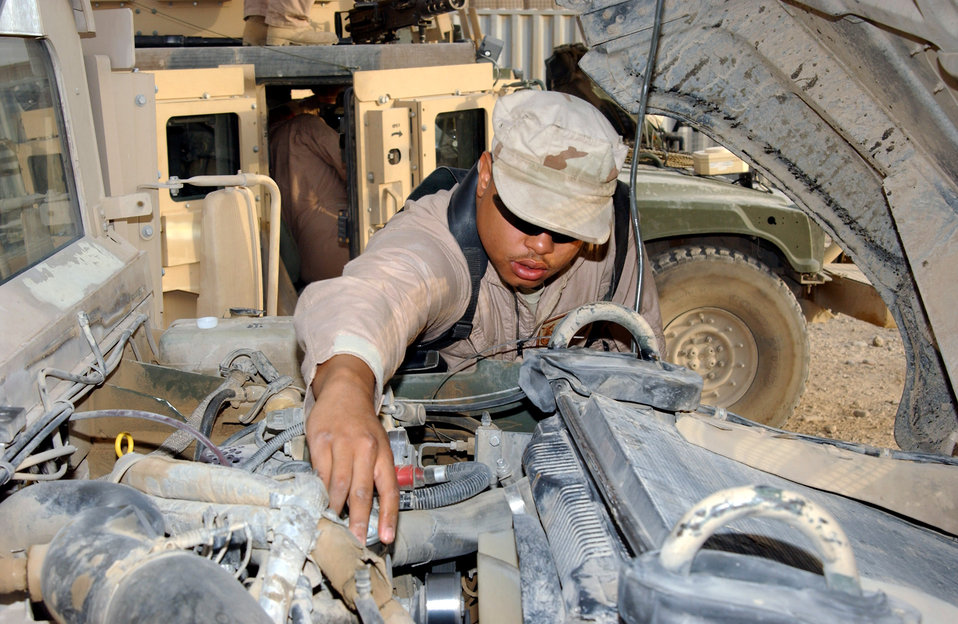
Security forces Airmen step outside the wire

Senior Airman Christian Carithers checks the fluid levels in a Humvee while preparing for another mission outside the wire with his police transition team in July at Contingency Operating Base Speicher, Iraq. Deployed from McGuire Air Force Base, N.J., Airman Carithers is assigned to the 732nd Expeditionary Security Forces Squadron Det. 1. Members of the police transition team check the vehicles thoroughly to ensure they will perform properly. The police transition team's goal is to help the Iraqis establish a functioning, independent police force.